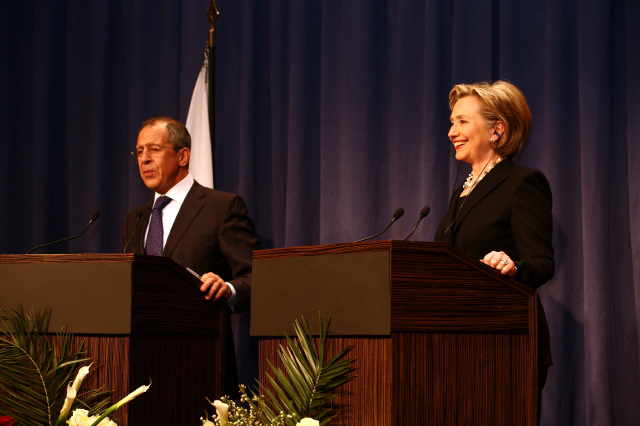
Press Conference With Russian Foreign Minister

Press conference after dinner meeting between U.S. Secretary of State Hillary Rodham Clinton and Russian Foreign Minister Sergey Lavrov in Geneva, Switzerland March 6, 2009.